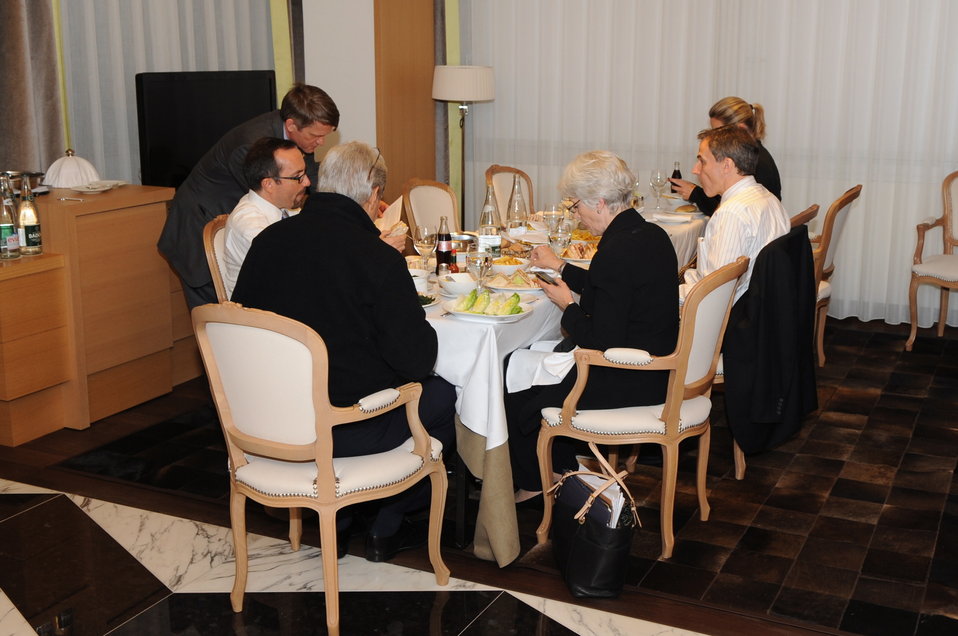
Secretary Kerry, Senior Staff Hold Working Dinner

9:53 p.m., September 13, 2013 - Following a negotiating session with Russian officials, U.S. Secretary of State John Kerry and members of his senior staff hold a working dinner in his hotel room to discuss revisions to a draft agreement related to the elimination of Syrian chemical weapons.